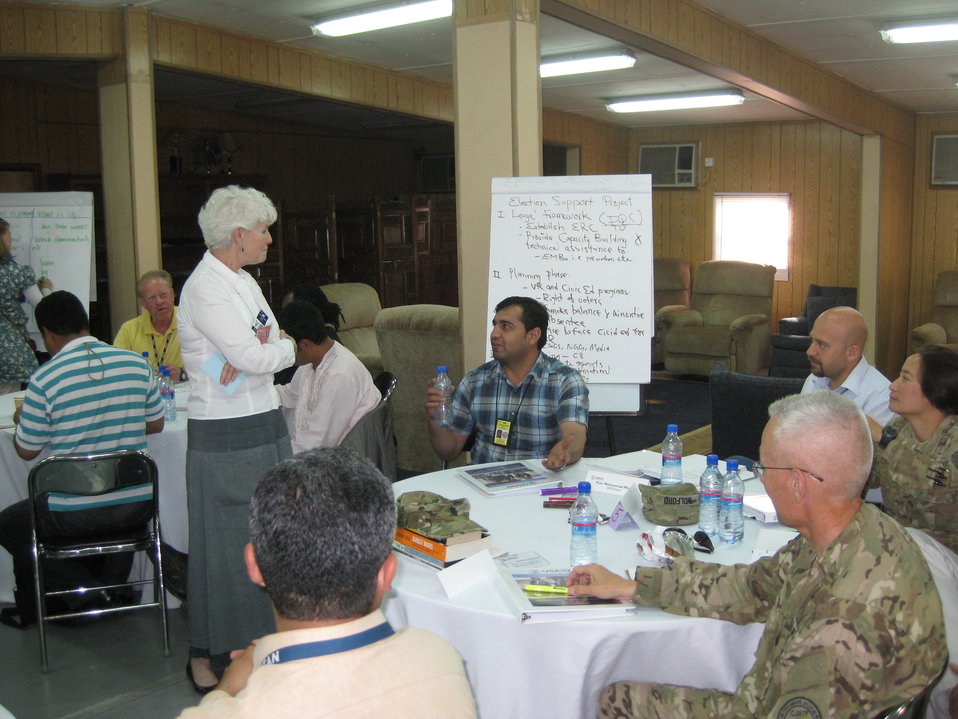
Afghan Youth Voices 043